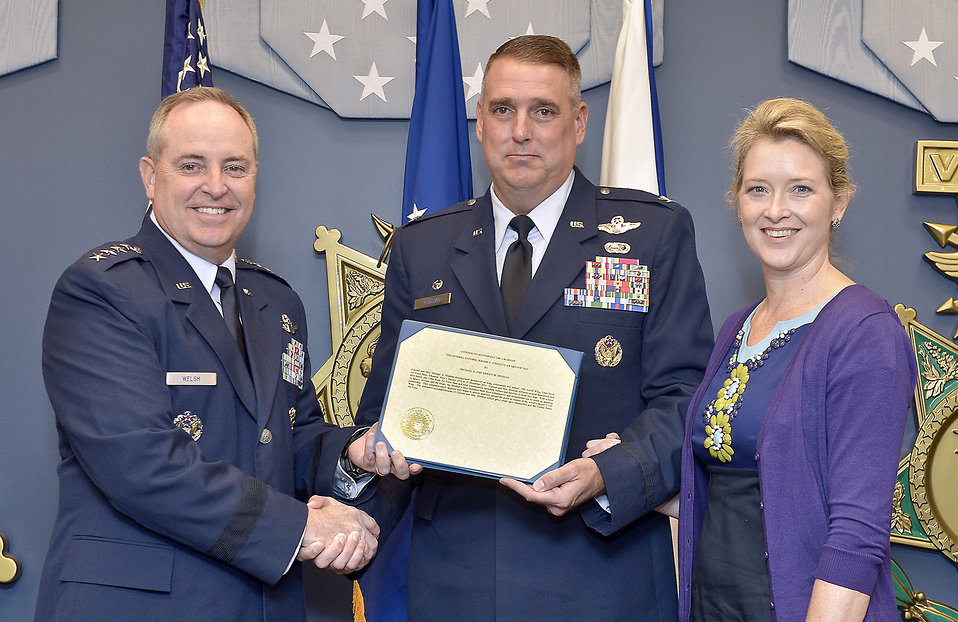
2012 General Jerome F. O’Malley and Diane O’Malley Award

Air Force Chief of Staff Gen. Mark A. Welsh III presents the 2012 General Jerome F. O'Malley and Diane O'Malley Award to Col. Michael Minihan and his wife, Ashley, during a ceremony at the Pentagon, Oct. 24, 2012. The Minihans earned the award for their time in command at Little Rock Air Force Base, Ark. The annual award recognizes the wing commander and spouse team whose contributions to the nation, Air Force, and local community best exemplify the highest ideals and positive leadership of a military couple in a key Air Force position.